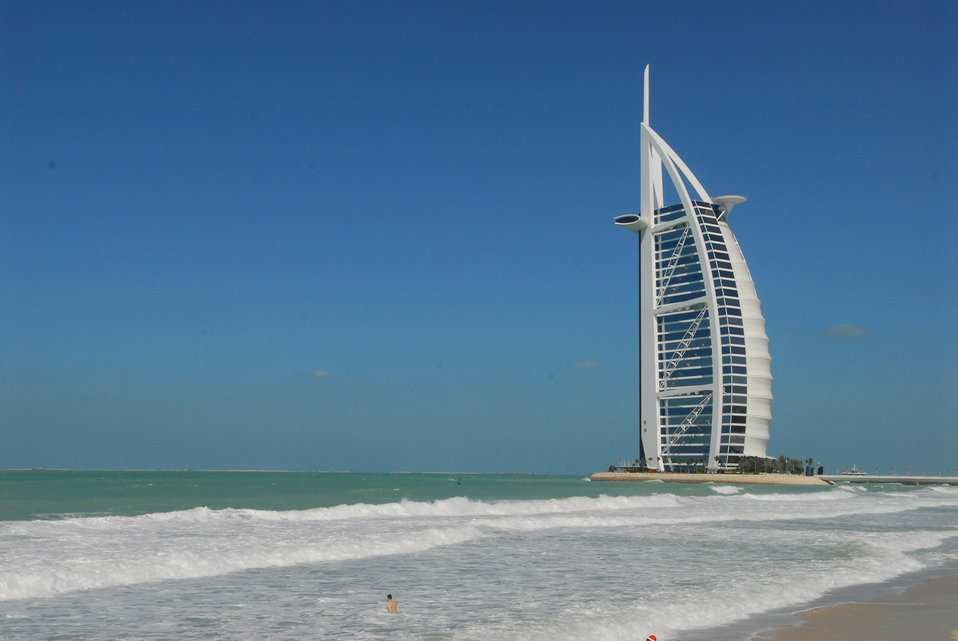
The seven stars hotel

Burj al arab in dubai.